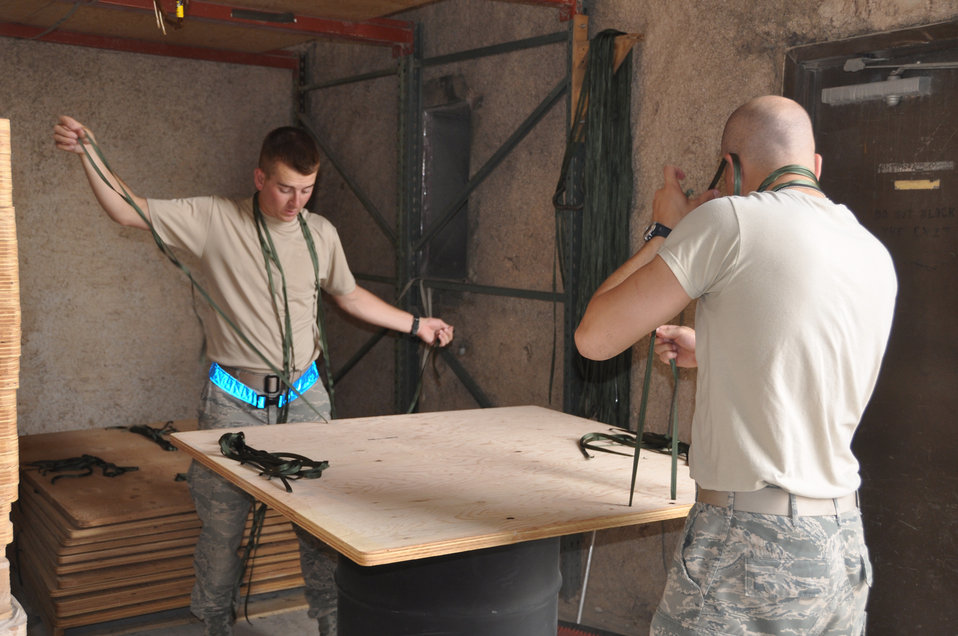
USAFA

U.S. Air Force Academy Cadet 2nd Class Keegan Peckham and USAFA Cadet 2nd Class Elliot Unseth prepare the pallets for bundles by stringing them with fastening straps while working with the U.S. Army Riggers detachment June 18, 2011, in Southwest Asia. Cadets Peckham and Unseth are taking part in